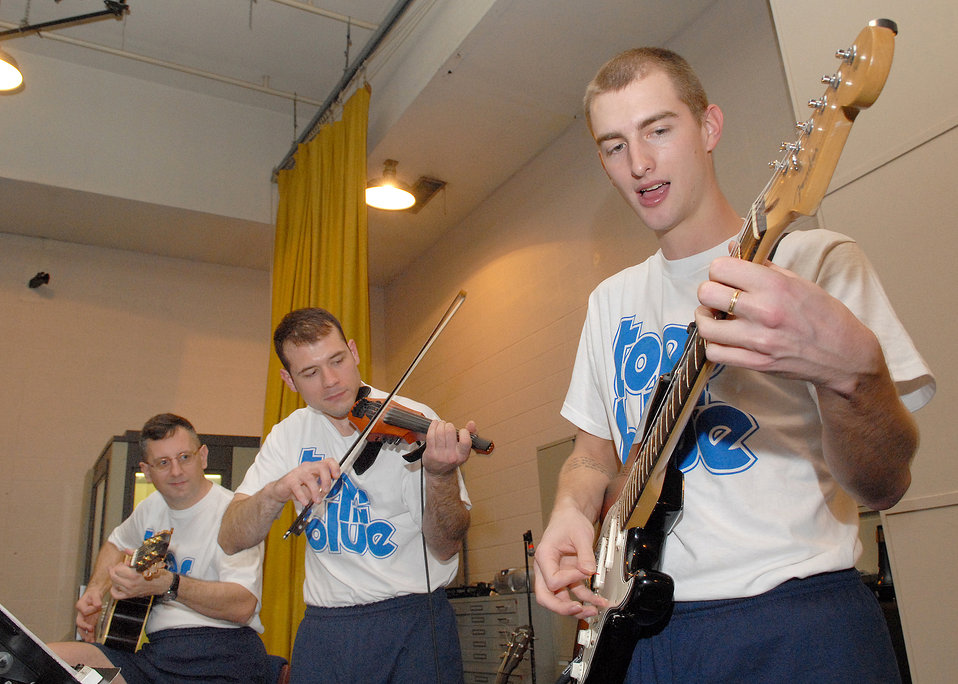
Tops In Blue 2007 rehearses for anniversary season

Tops in Blue 2007 cast members rehearse in their production center Feb. 7 at Lackland Air Force Base, Texas. This year's theme is